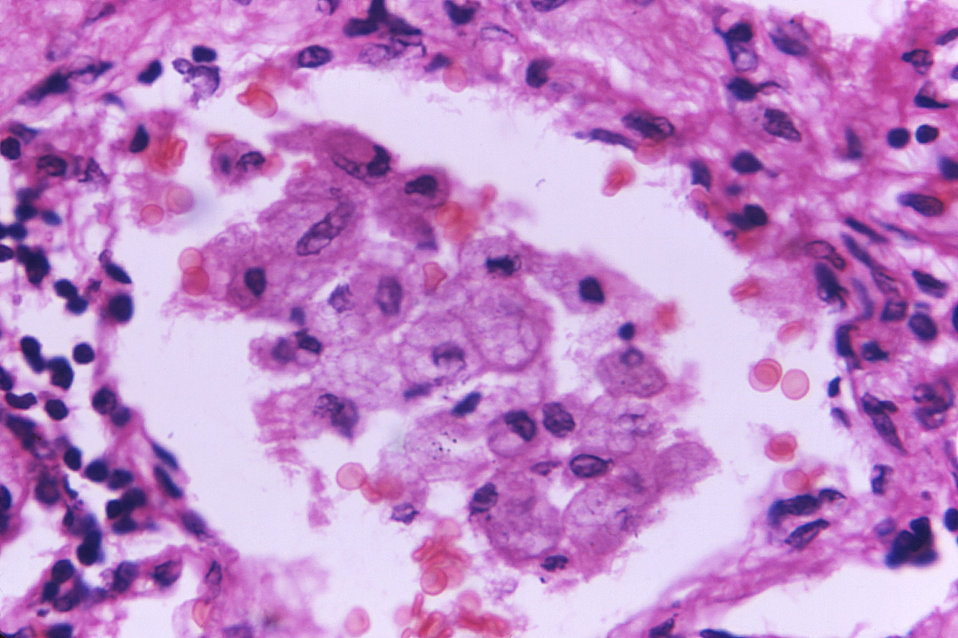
Under a magnification of 800X, this photomicrograph of a lung lesion tissue specimen, revealed some of the cytoarchitectural morphology associated with the disease cryptococcosis due to the infiltration of Cryptococcus. sp. fungal organisms.